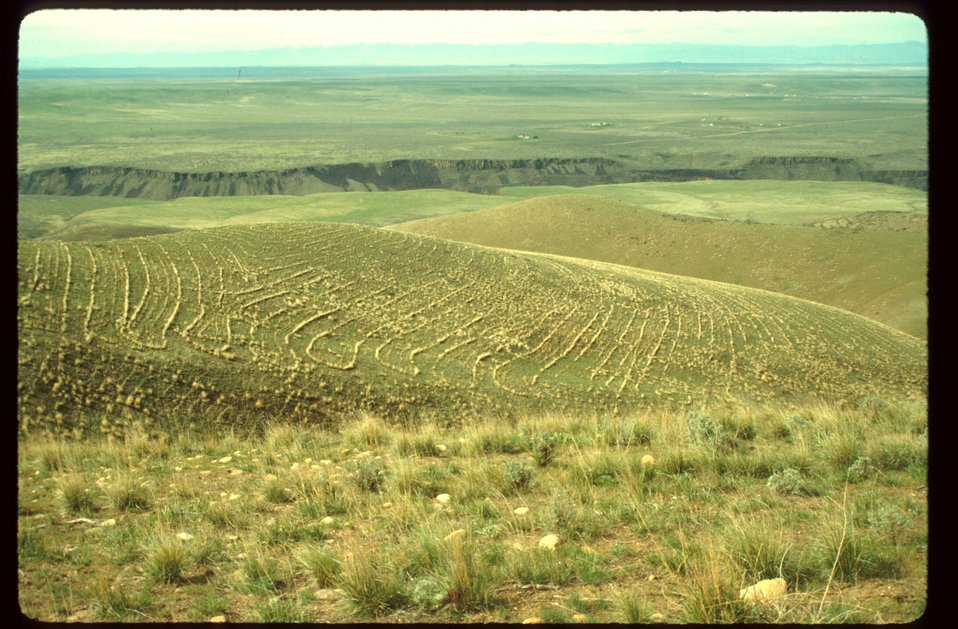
Lucky Peak Seeding Whitmer Blue Bunch Wheat Grass Range Restoration Project